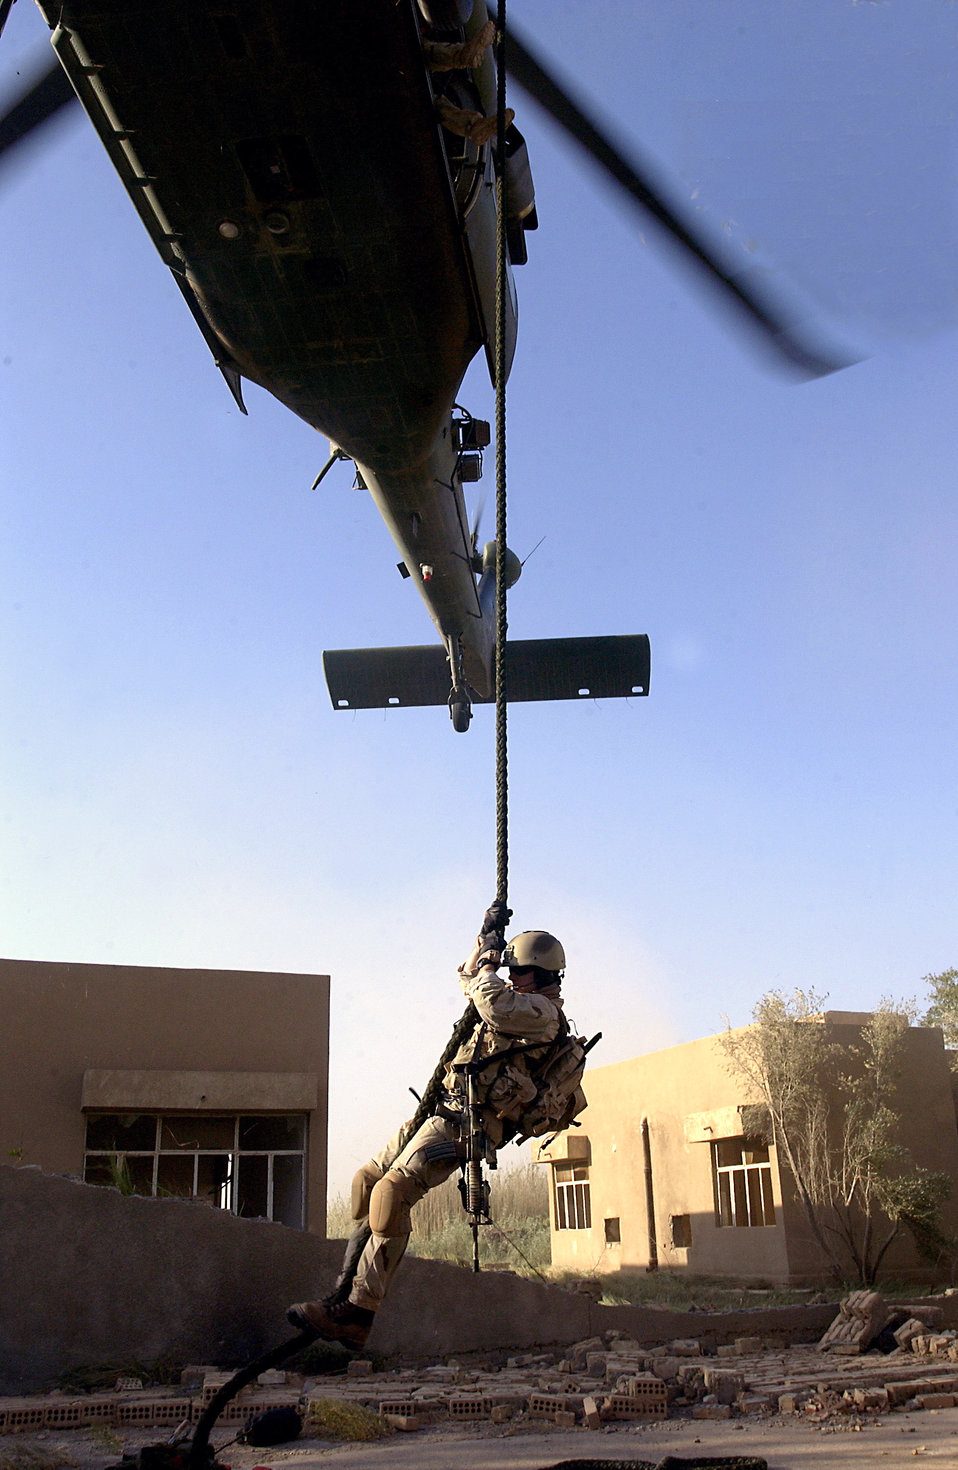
Dropping in

OPERATION IRAQI FREEDOM -- A pararescueman drops in on a rope from an HH-60G Pave Hawk helicopter during a Combat Search and Rescue exercise. The exercise was designed to hone the skills of a CSAR team supporting Operation Iraqi Freedom.